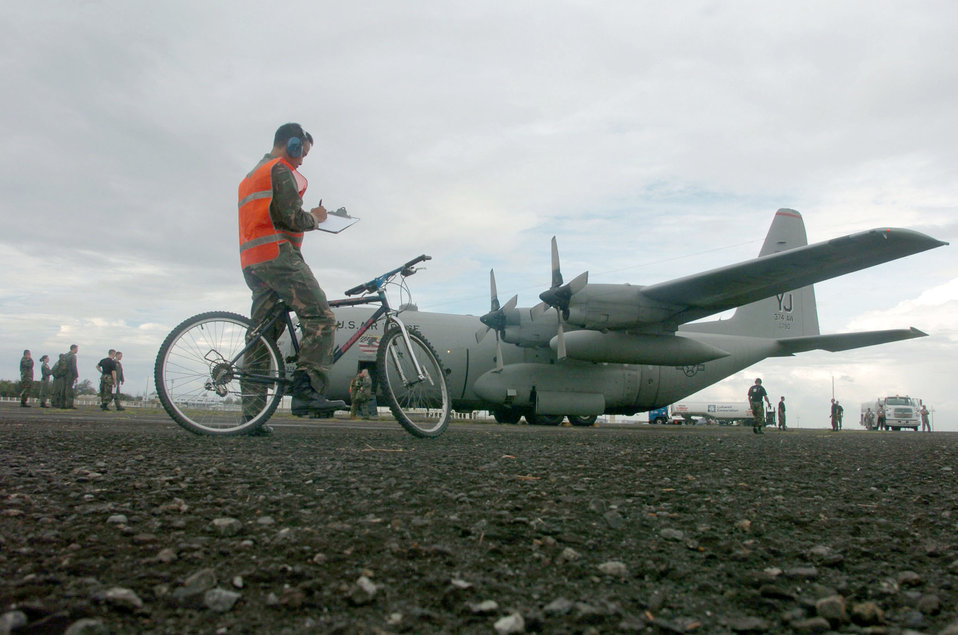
Airmen arrive for Balikatan 2004

CLARK AIRFIELD, Philippines -- Philippine air force Staff Sgt. Danilo Cano waits for newly arrived airmen from the 36th Airlift Squadron at Yokota Air Base, Japan, to exit from their C-130 Hercules aircraft during exercise Balikatan 2004. More than 100 airmen and four C-130 Hercules aircraft from Yokota are participating in joint training with Philippine military forces. Exercise Balikatan helps improve combined planning, combat readiness and interoperability between U.S. and Philippine armed forces. About 2,500 U.S. troops and 2,300 Philippine forces will take part in the exercise.